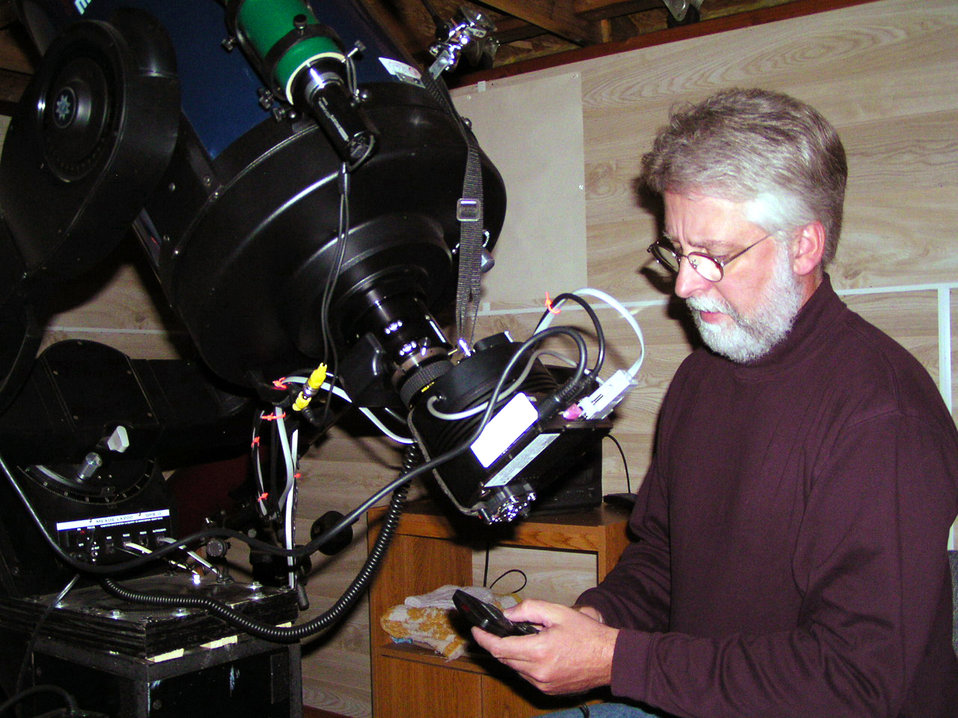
Schriever space pros keep eyes on the skies

Scott Donnell uses a 12-inch reflecting telescope to observe variable stars, asteroids and even GPS satellites. Mr. Donnell is an aerospace engineer with AI Solutions who has worked with the 4th Space Operations Squadron at Schriever Air Force Base, Colo.